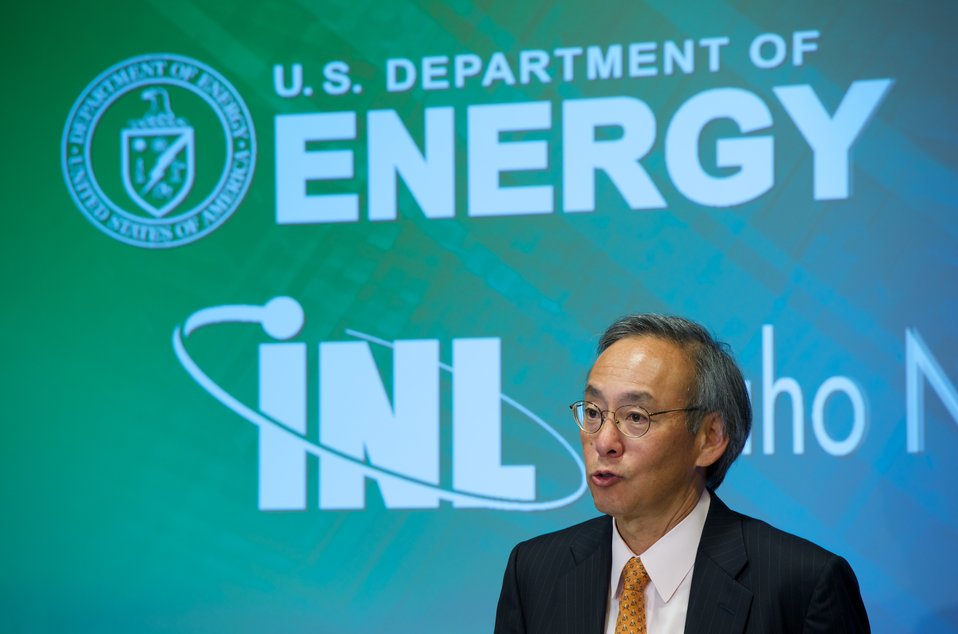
Energy Secretary Steven Chu addresses Idaho National Laboratory employees at the Center for Advanced Energy Studies at INL.